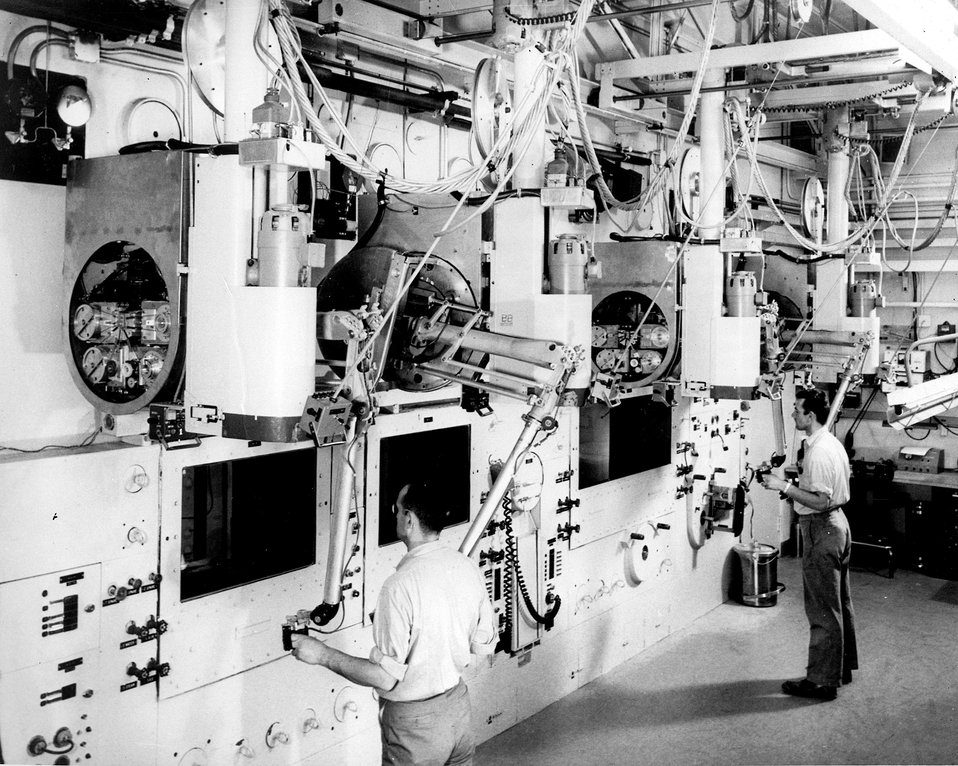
The master control arms of four Electric Master-Slave Manipulators, Model E3 are shown in operation.
c.1965